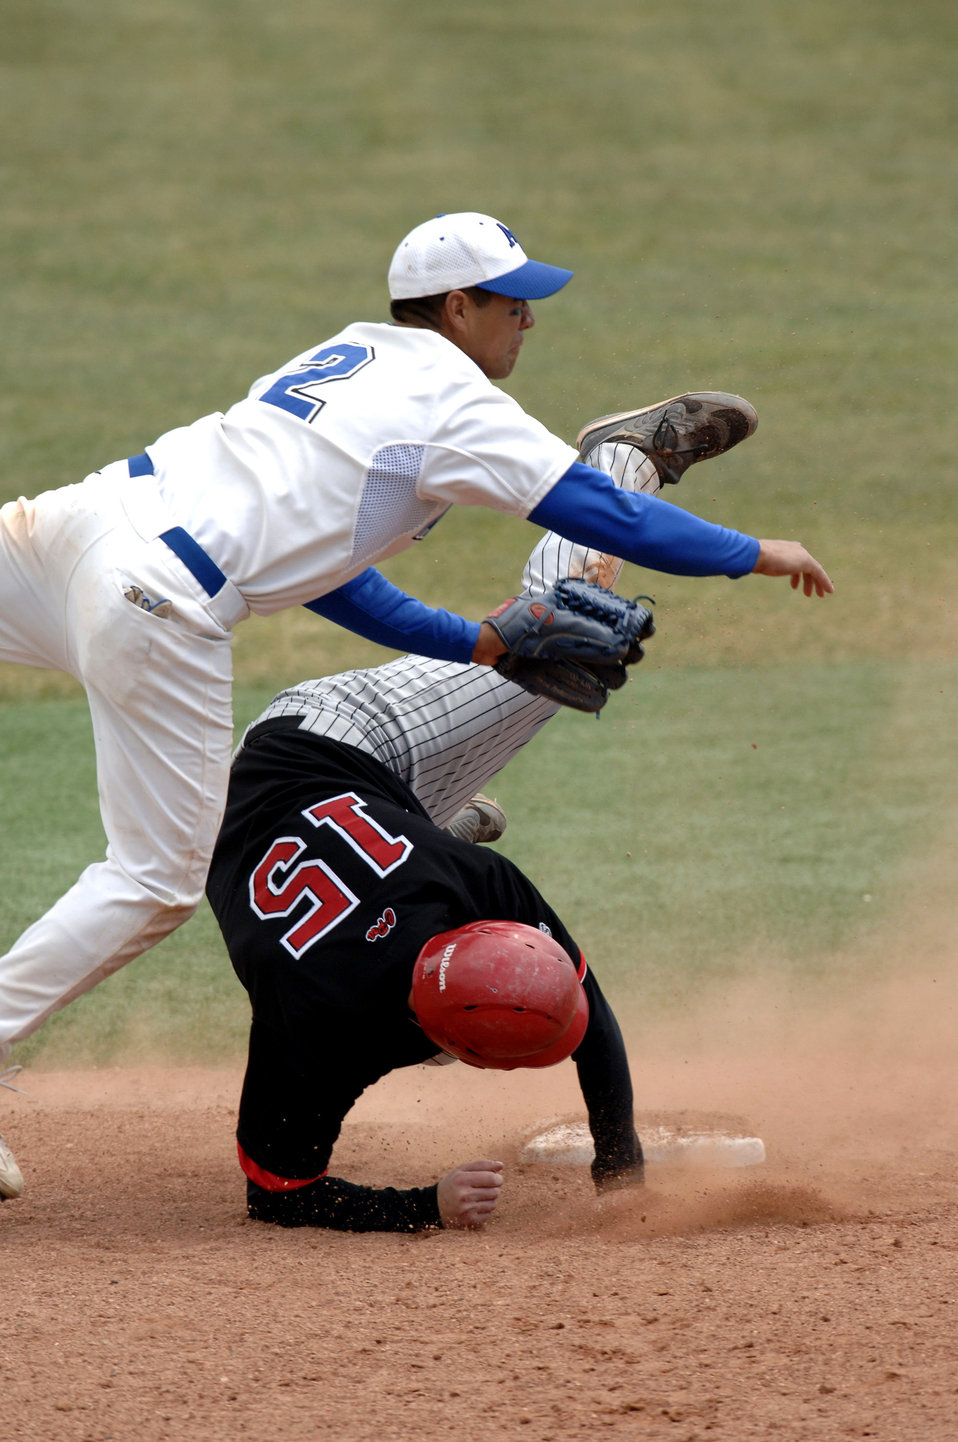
New Mexico sweeps Falcons

Senior second baseman Geno Salazar throws to first during a double play in game three of the 3-game series against the New Mexico Lobos. New Mexico swept the 3-game series from the Air Force Falcons.